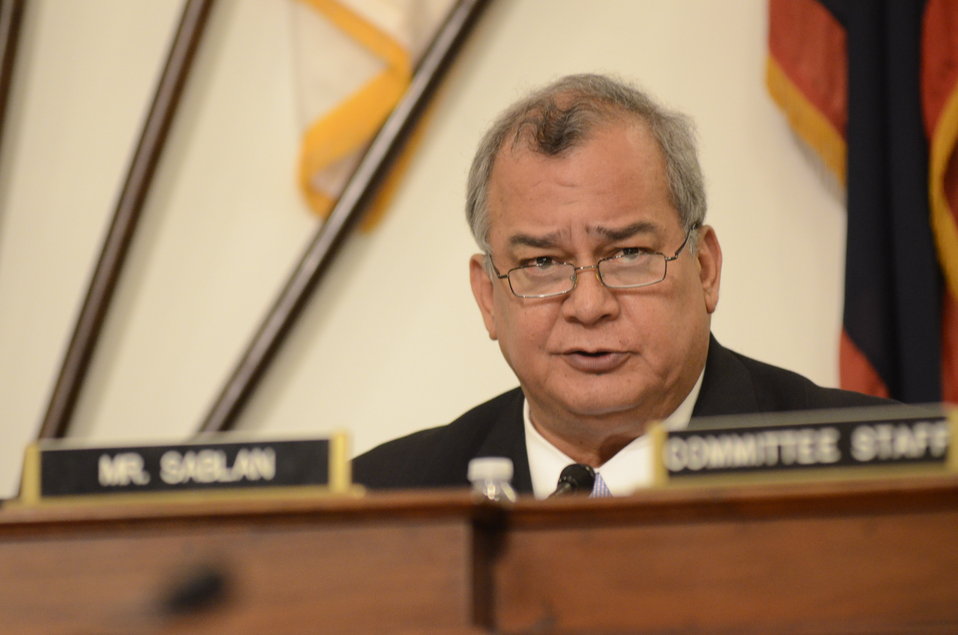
Natural Resources Committee member Congressman Gregorio Kilili Camacho Sablan (Northern Mariana Islands) makes remarks at the hearing on the Retailers & Entertainers Lacey Implementation & Enforcement Fairness Act & Freedom from Over-Criminalization & Unjust Seizures Act, at the Longworth House Office Building in Washington, D.C. on Tuesday, May 8, 2012.